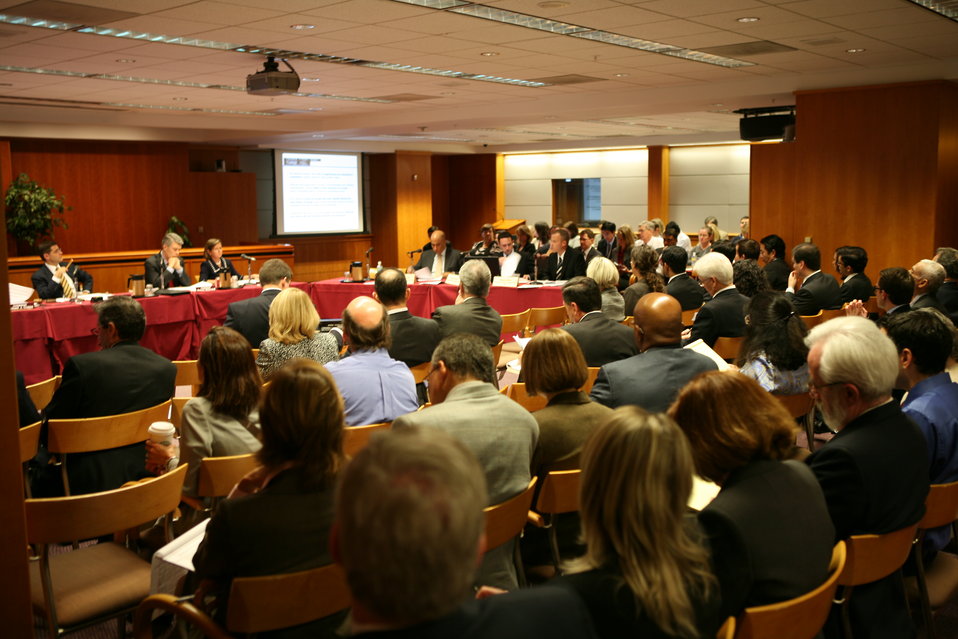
Broadband Midterm Review 9-29-09